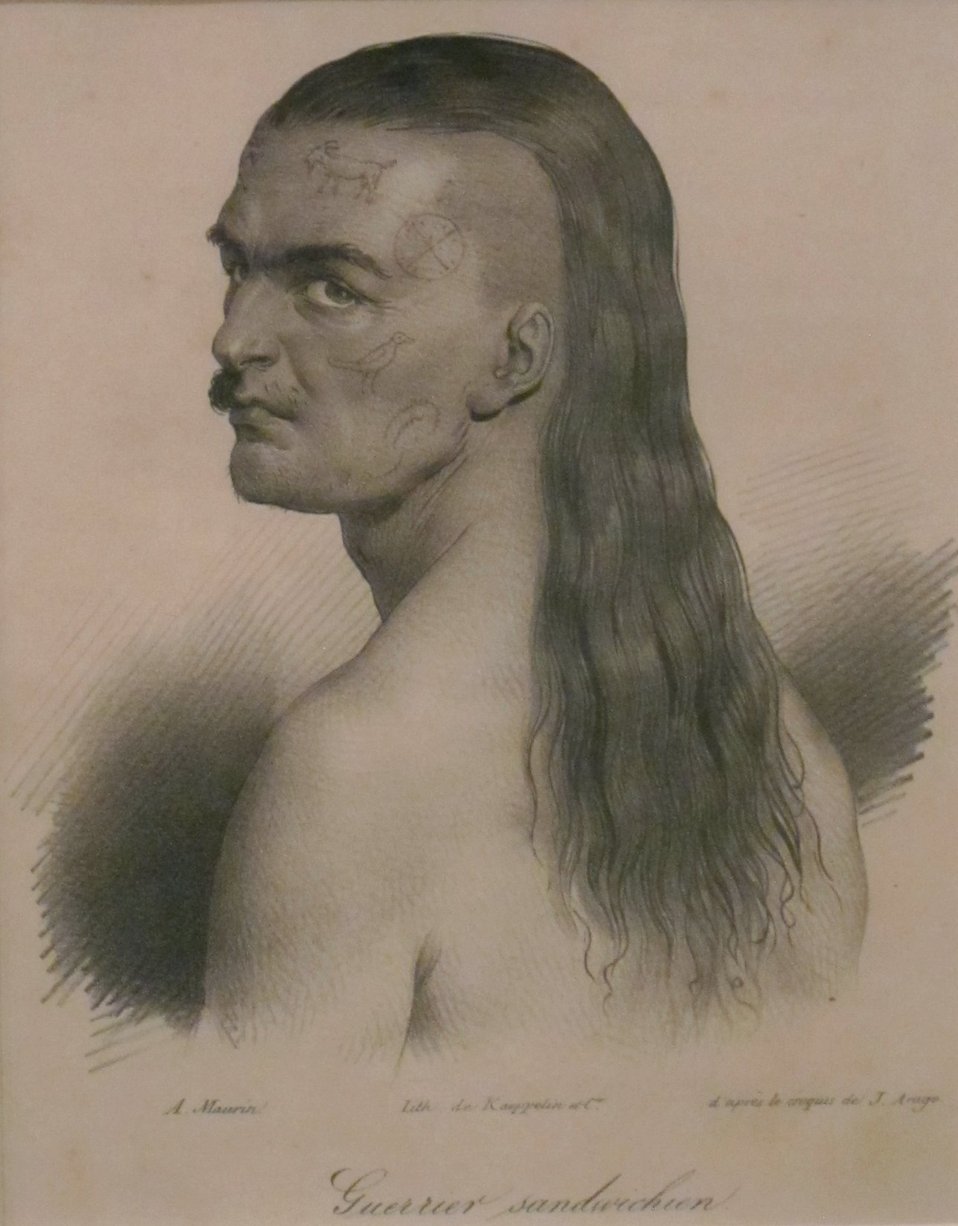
'Tattooed Hawaiian Chief', lithograph after Jacques Arago, Honolulu Museum of Art